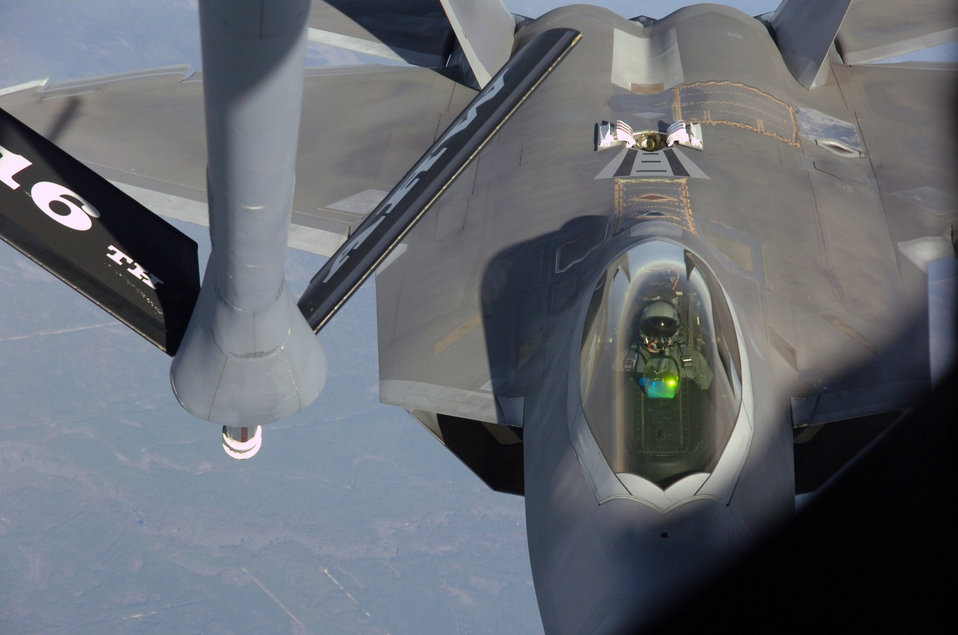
Feeding the Raptor

An F-22 Raptor lines up with a KC-135 Stratotanker during an air-to-air refueling training mission Dec. 4 over Eglin Air Force Base, Fla. The F-22 is from the 43rd Fighter Squadron at Tyndall AFB, Fla. The KC-135 is from the 916th Air Refueling Wing, an Air Force Reserve wing located at Seymour Johnson AFB, N.C.